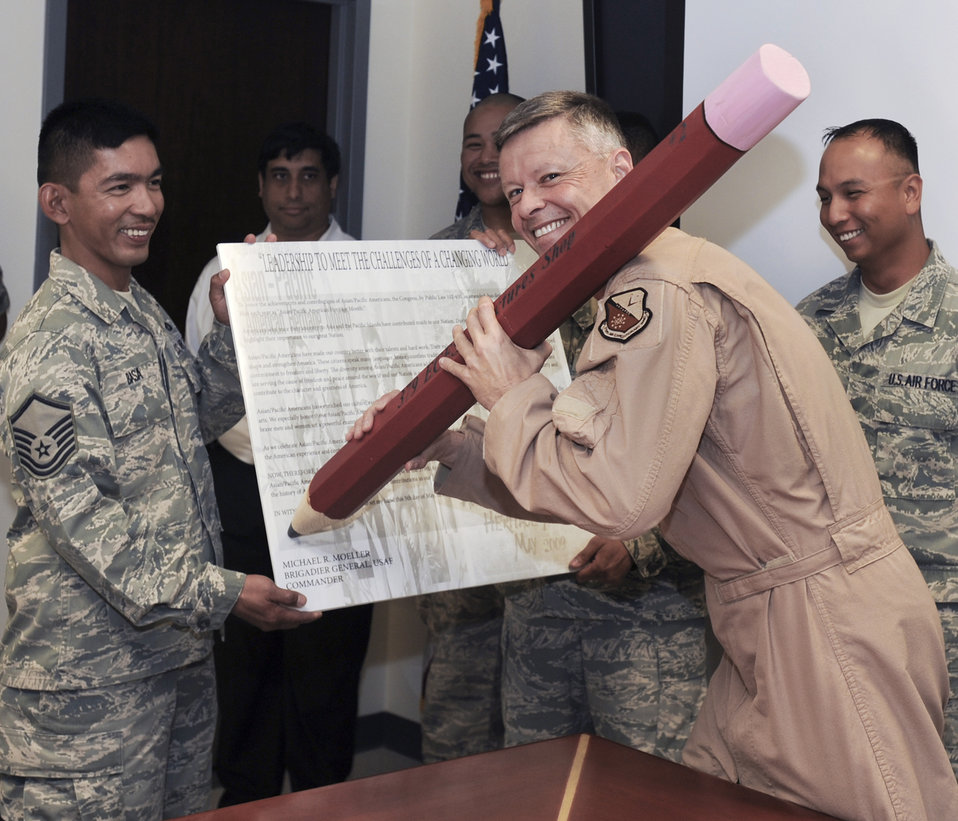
Proclamation Signing

Brig. Gen. Michael Moeller, commander of the 379th Air Expeditionary Wing at an air base in Southwest Asia,